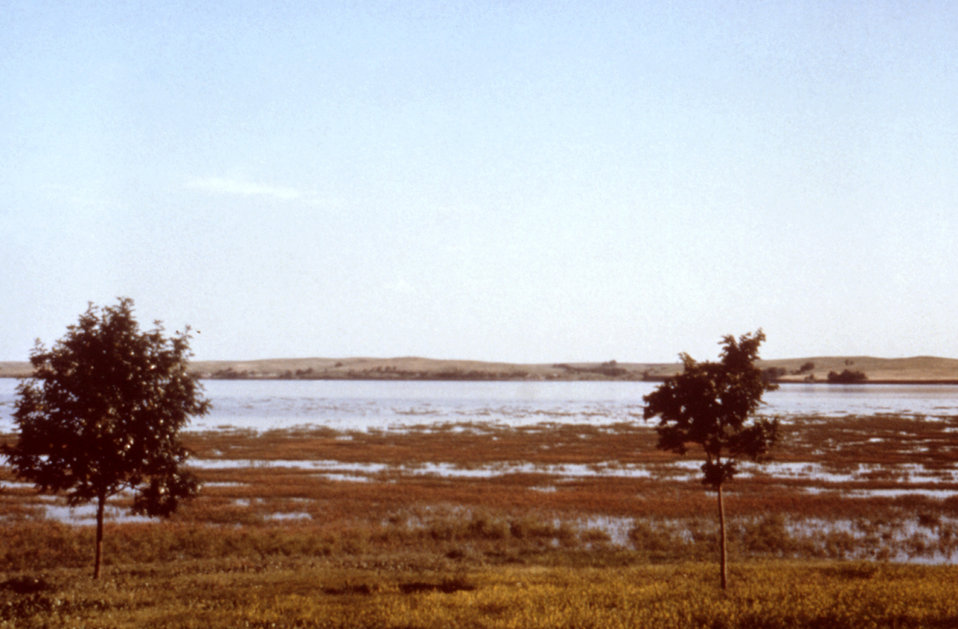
This photograph of a lake in Harlan County, Nebraska was taken during a vector-borne disease investigation.